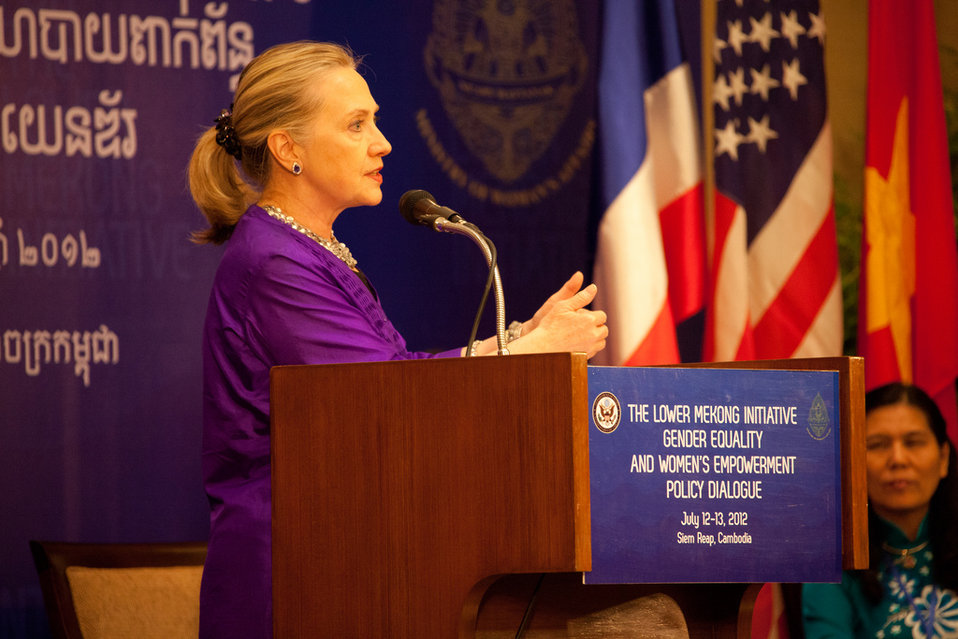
Secretary Clinton Delivers Remarks at the Women's Empowerment Event

U.S. Secretary of State Hillary Rodham Clinton delivers remarks at the Lower Mekong Initiative Gender Equality and Women's Empowerment Event in Siem Reap, Cambodia, on July 13, 2012.